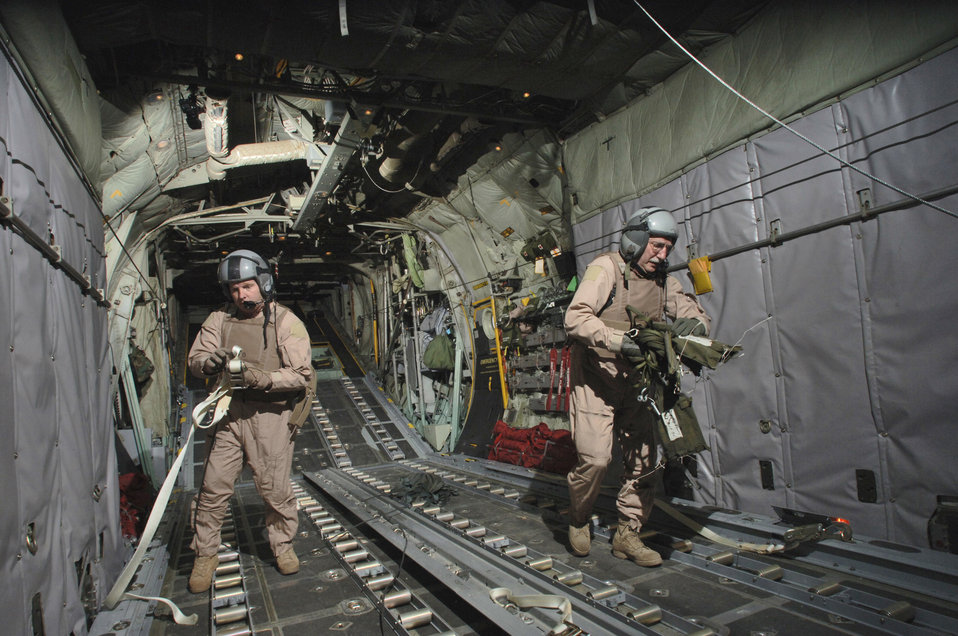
Special delivery

Senior Master Sgt. Ted Poplarchik (right) and Master Sgt. Bruce Leehan clean up used rigging during their flight back to their deployed base Thursday, March 9, 2006. Their crew just delivered 24,000 pounds of material to three different forward operating bases miles from the Pakistan border. Sergeant Poplarchik is with 144th Airlift Squadron, Kulis Air National Guard Base, Alaska, and Sergeant Leehan is with Oklahoma Air National Guard's 185th Airlift Squadron at Will Rogers World Airport. Both are deployed to the 774th Expeditionary Airlift Squadron at Bagram Air Base, Afghanistan.